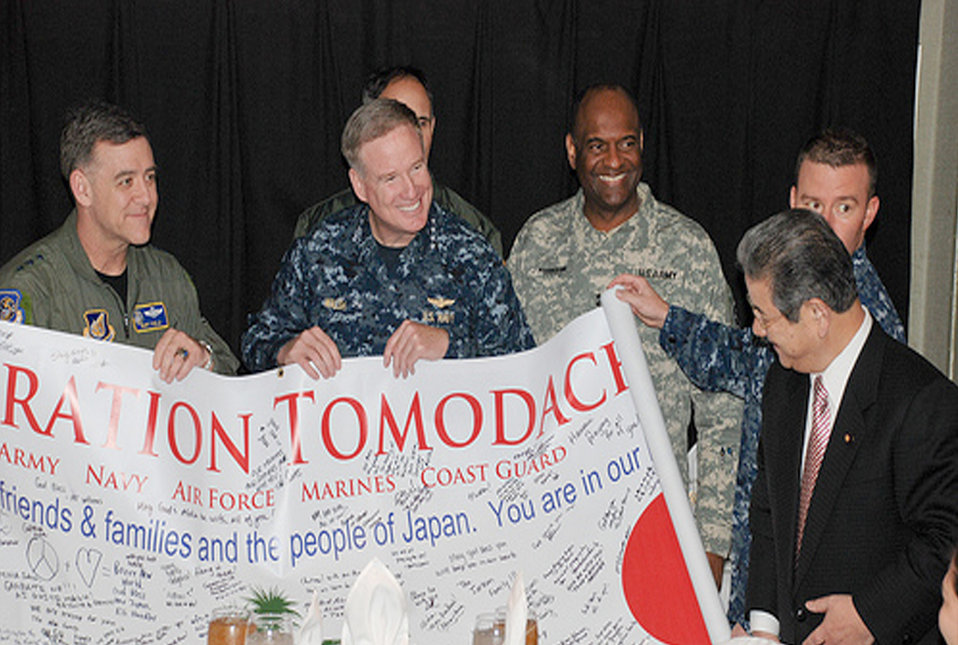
Japanese minister thanks U.S. service members

Japanese Defense Minister Toshimi Kitazawa views a banner created by U.S. service members in honor of Operation Tomodachi during his visit to the USS Ronald Reagan, April 4, 2011. Holding the banner are Commander, U.S. Forces Japan, and Commander, 5th Air Force, Pacific Air Forces Lt. Gen. Burton Field; and U.S. Pacific Fleet Commander Navy Adm. Patrick Walsh.